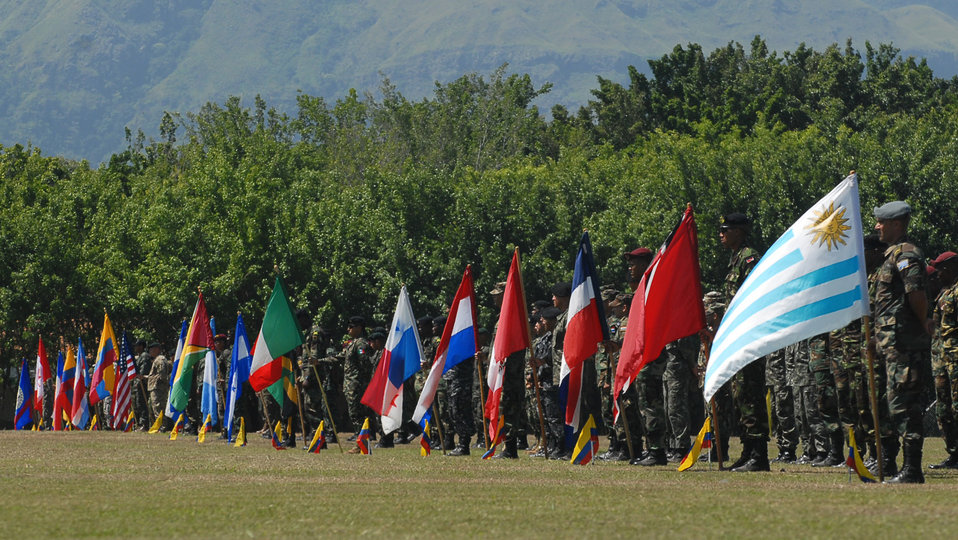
Commando Competition

Proudly displaying their nation’s colors, 21 special operations forces teams stand ready on the parade field June 6, 2012, during the opening ceremony at the Colombian National Training Center at Fort Tolemaida, Colombia. (U.S. Army photo/Sgt. 1st Class Keith Turner